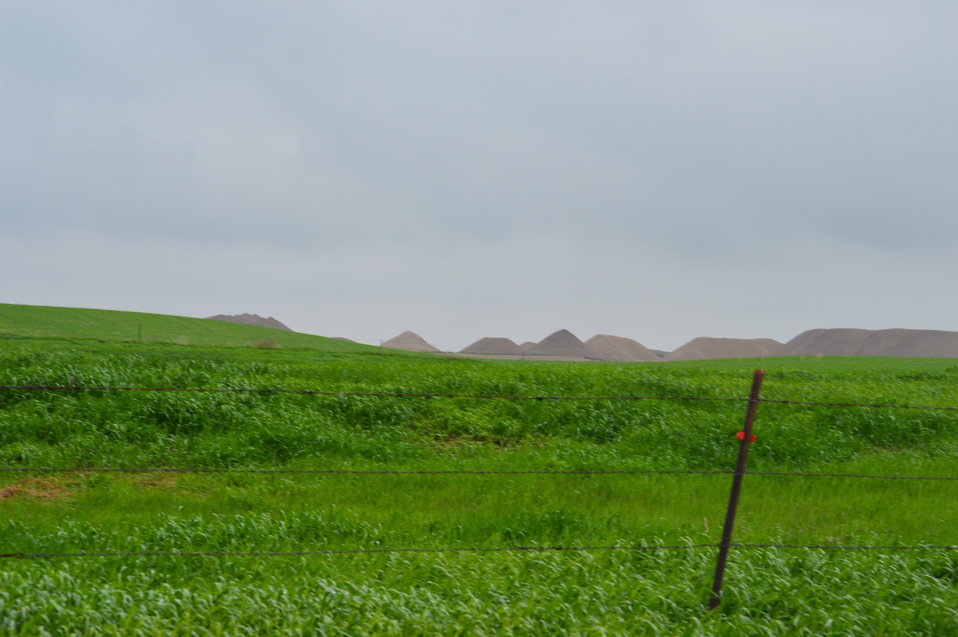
Scenic view of Lost Lake NWR

Scenery and wildlife at Lost Lake National Wildlife Refuge in North Dakota.